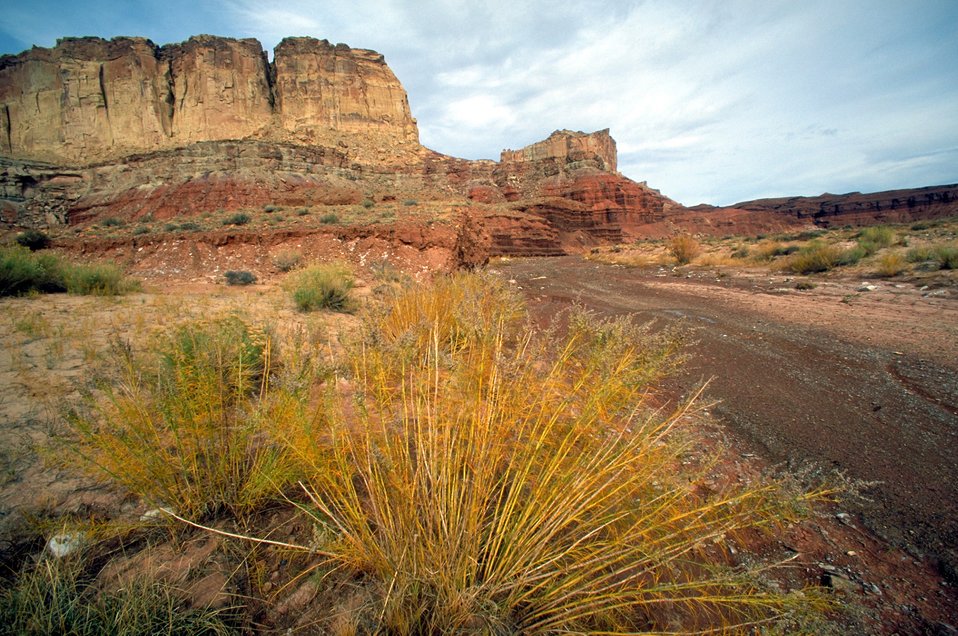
Red Canyon Loop, San Rafael Swell.